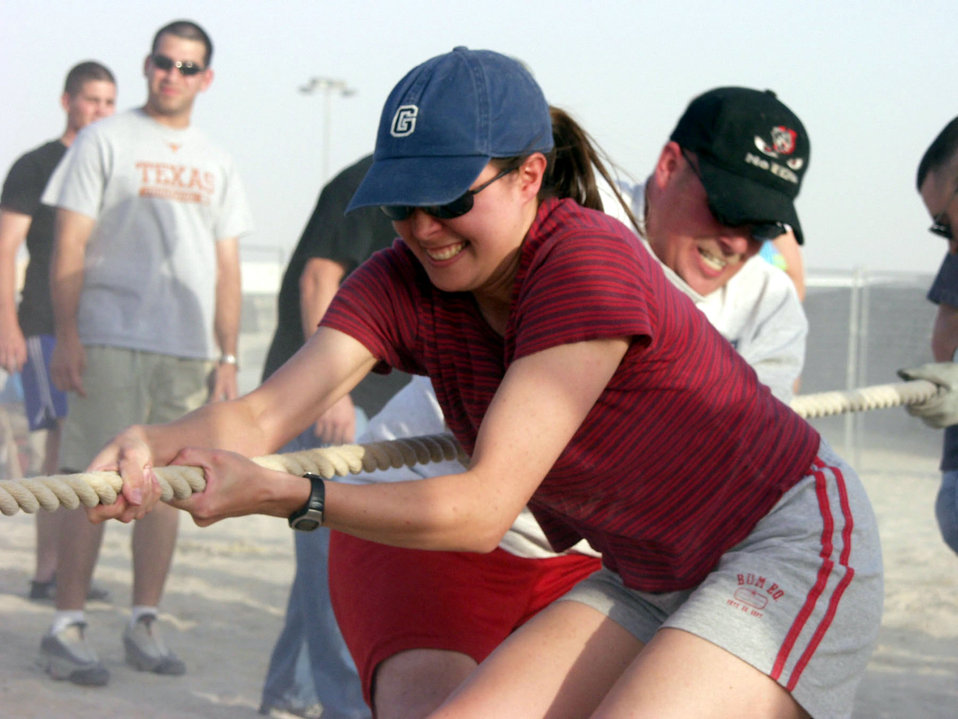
Fun in the sand

OPERATION IRAQI FREEDOM -- First Lt. Theresa Weihrich grimaces as she helps her 386th Expeditionary Communications Squadron teammates win a tug-of-war contest May 26 during the Iraqi Freedom Festival at a forward-deployed air base. Weihrich is deployed from Mountain Home Air Force Base, Idaho. The 386th Expeditionary Services Squadron sponsored the event that featured a variety of morale-boosting contests and activities for airmen, soldiers, sailors and Marines.